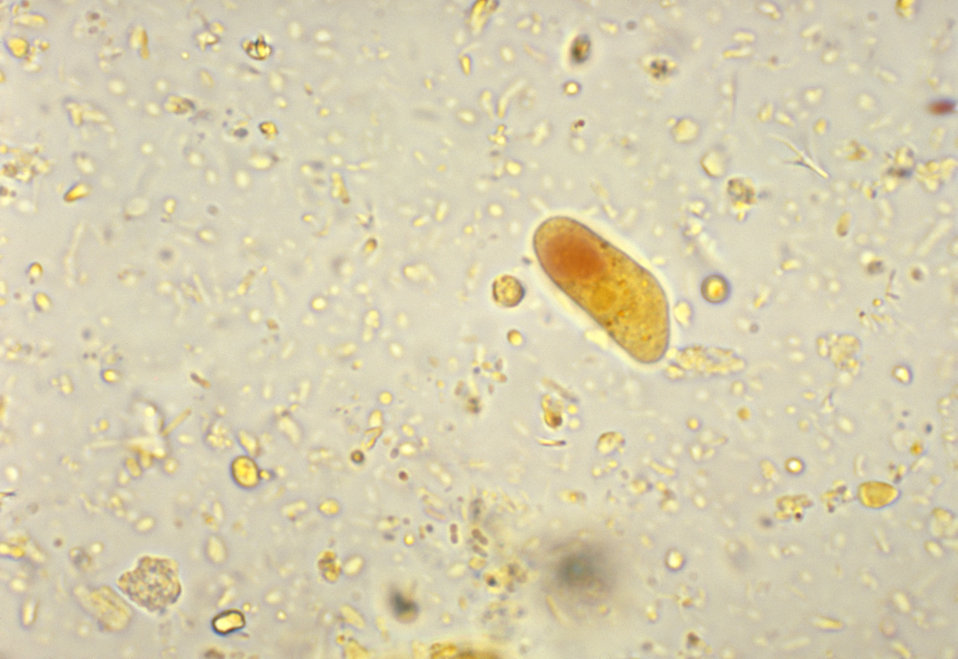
This photomicrograph depicts the cyst of an Iodamoeba b�ii amoebic parasite.